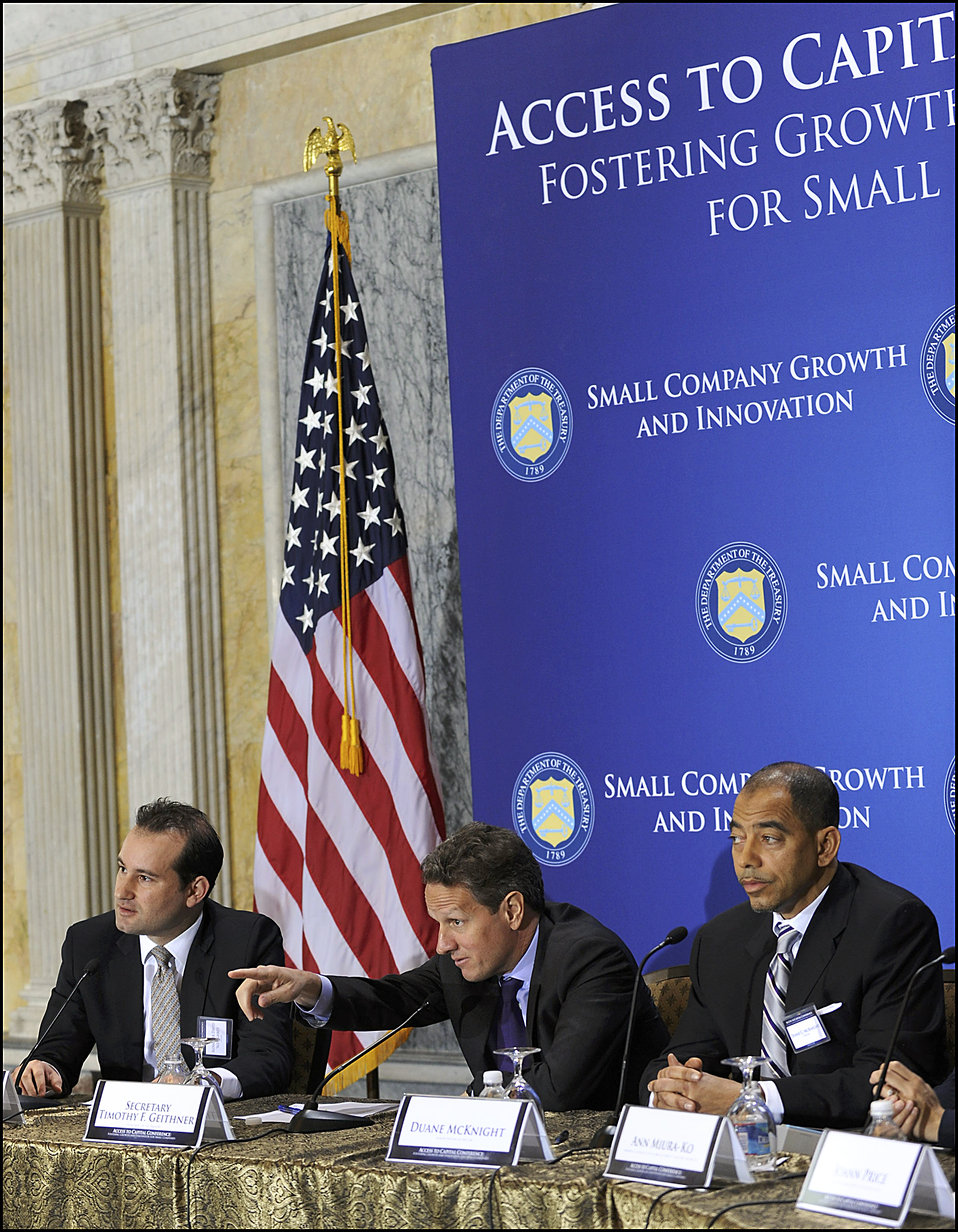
Access to Capital Conference

Secretary Geithner looks to the audience for comments and questions.